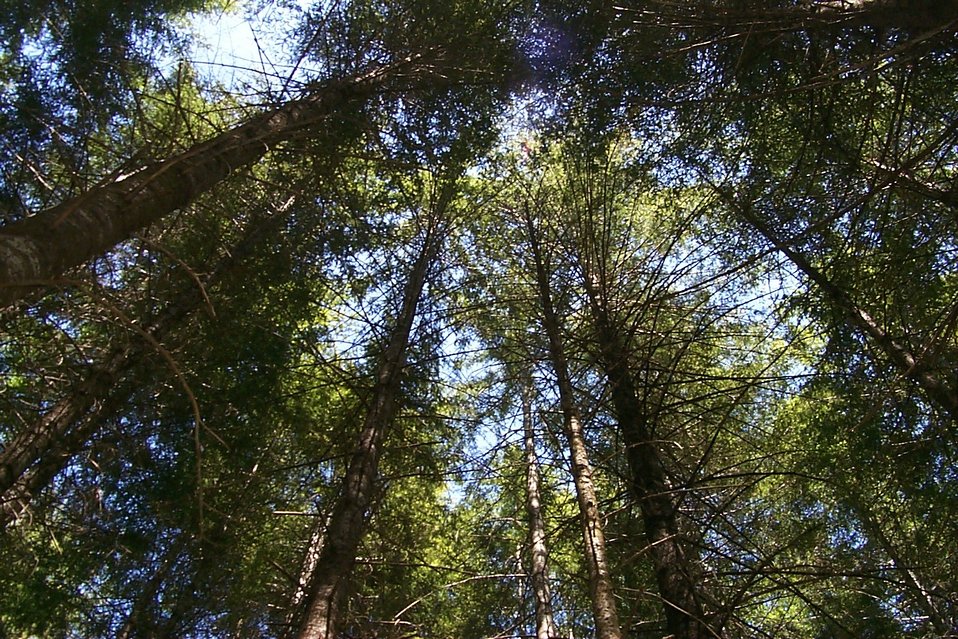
Camas East Timber Sale in Late Successional Reserve.